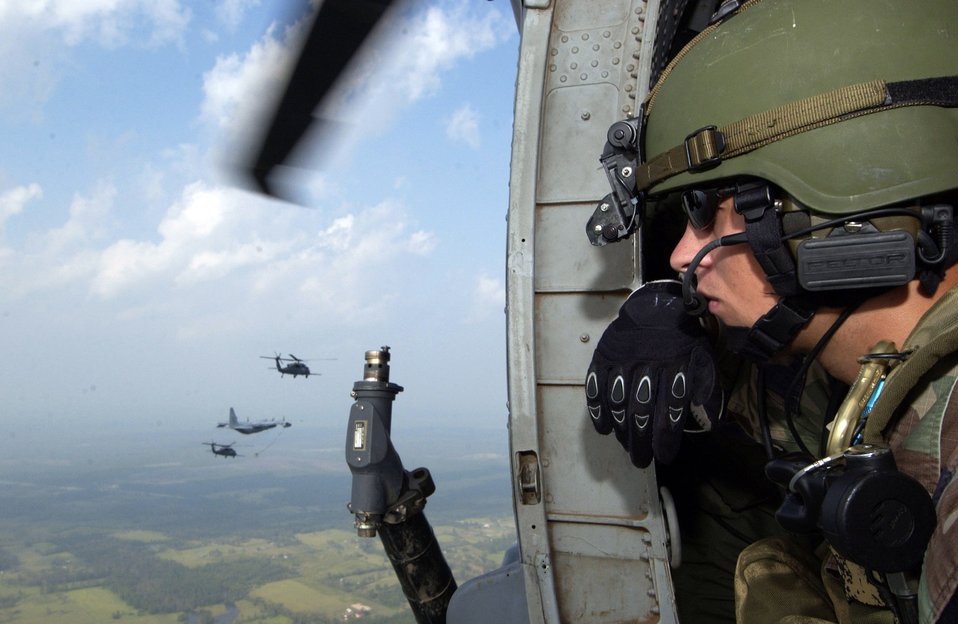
Search and rescue

RANDOLPH AIR FORCE BASE, Texas -- Senior Airman Arthur Zingler, a 38th Rescue Squadron pararescueman, watches an Air Force Special Operations Command HC-130P refuel an HH-60 Pave Hawk helicopters in the skies over southern Louisiana. The special operations helicopters in-flight refueling capability allows search crews to continue search and rescue missions for several hours.